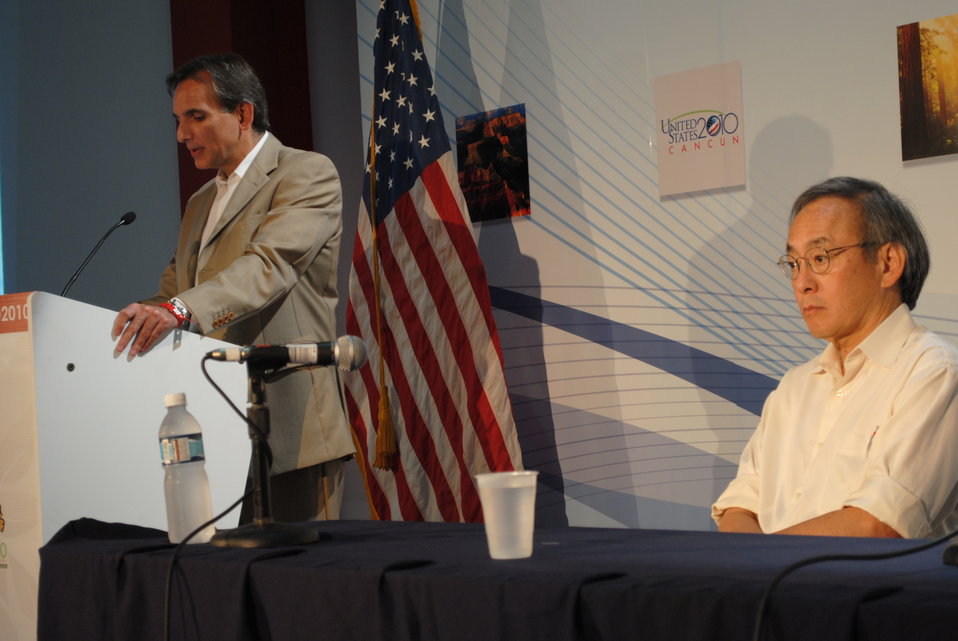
Ambassador Pascual Introduces Secretary Chu

U.S. Ambassador to Mexico Carlos Pascual introduces U.S. Secretary of Energy Steven Chu at the U.S. Center at COP-16 in Cancun, Mexico, on December 6, 2010.